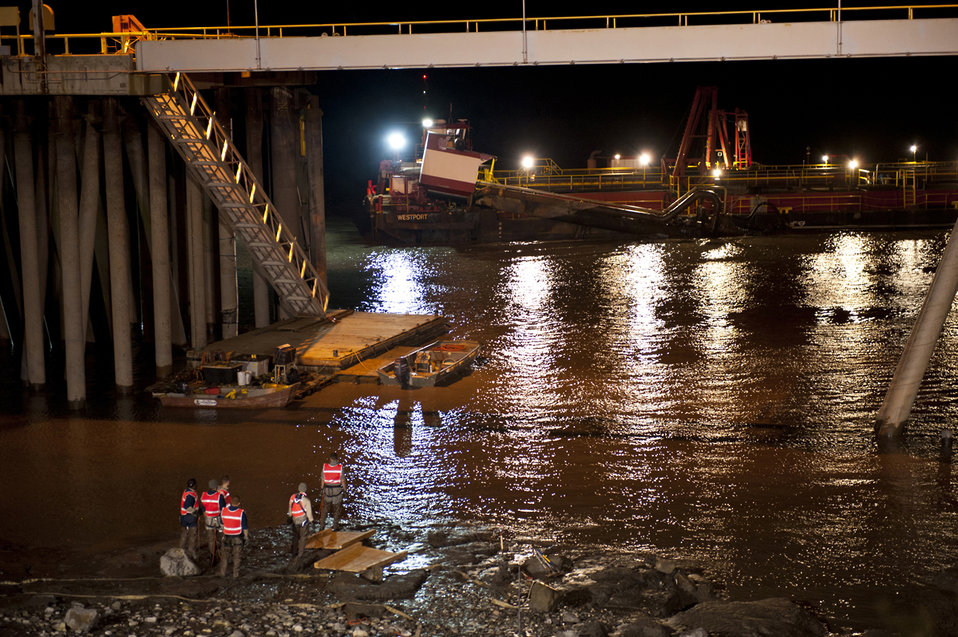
Phantom in the water

Airmen from the 3rd Maintenance Squadron Crash Recovery Team survey the area where they will dig out an F-4 Phantom II external fuel tank at the Port of Anchorage, Alasak, Sept. 18, 2012. F-4s were flown at Elmendorf Air Force Base through 1982.